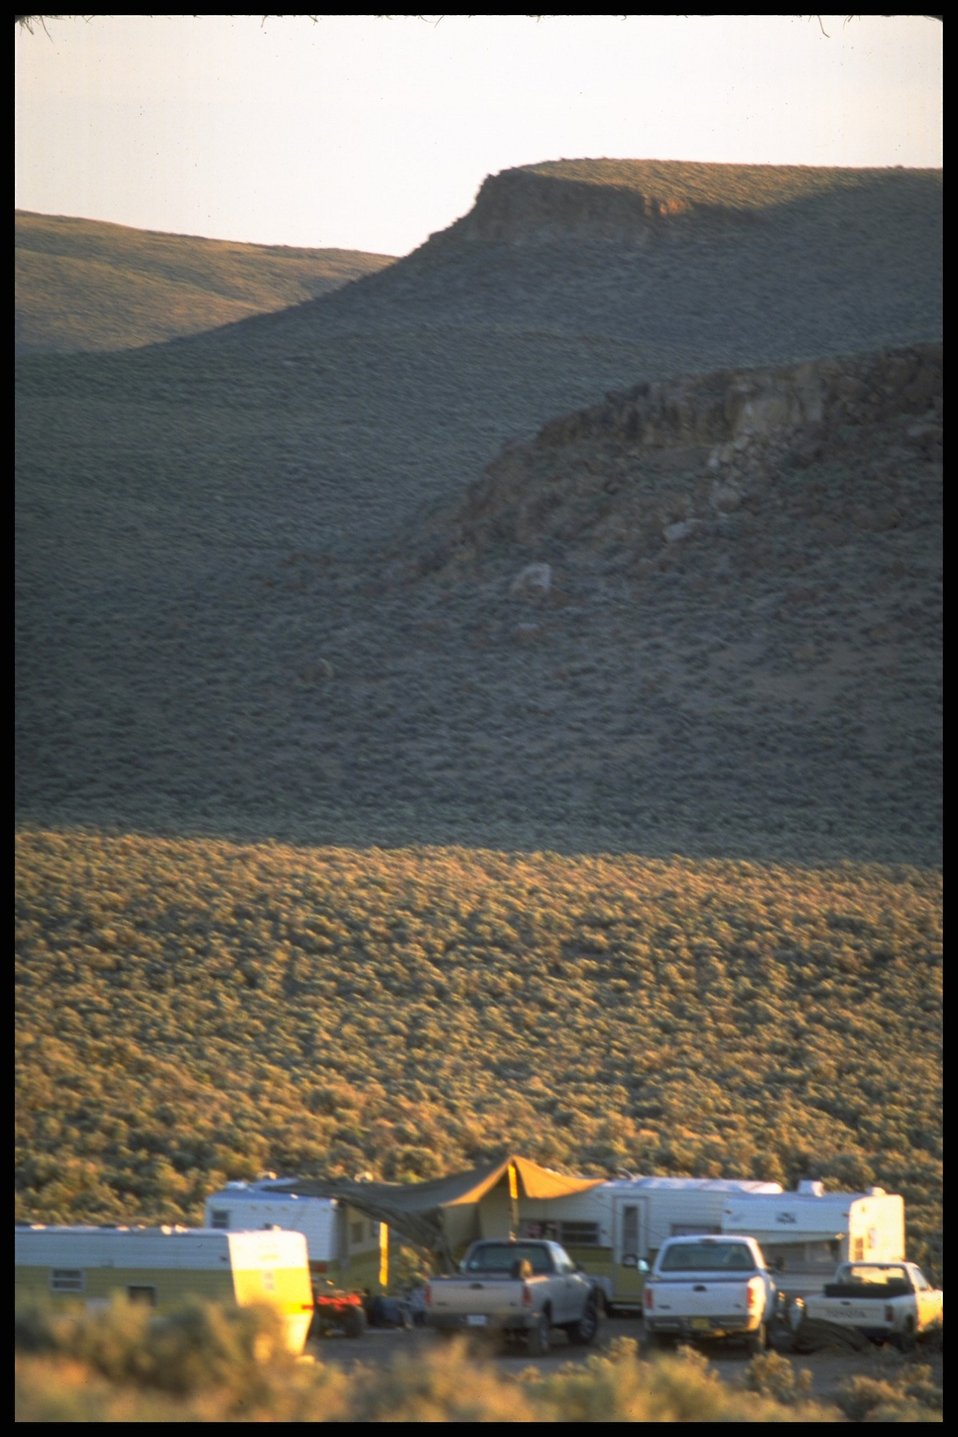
Sage Hen Crew camp, Lakeview District.